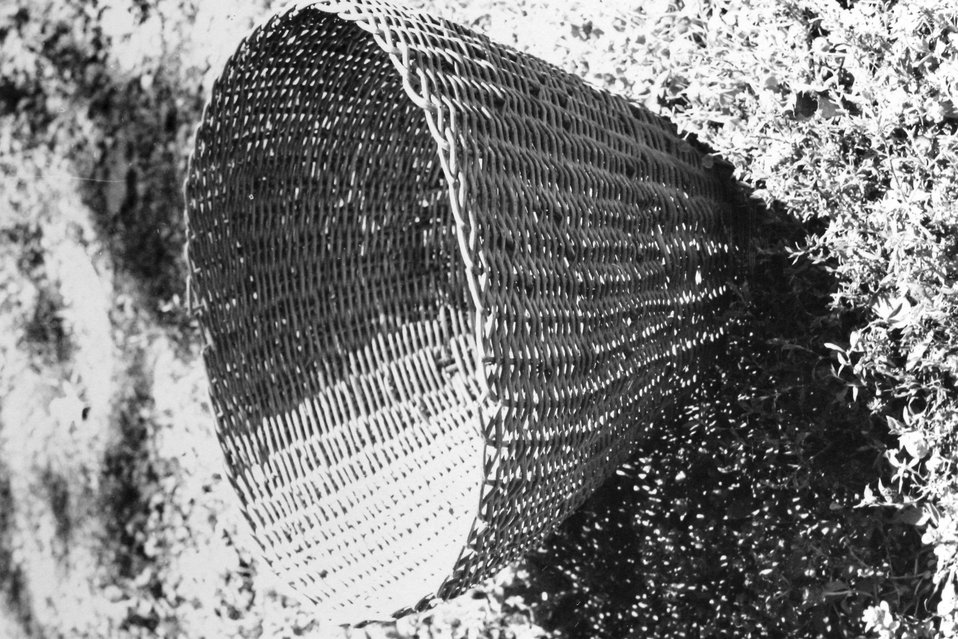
A basket made by Adeline Billings.